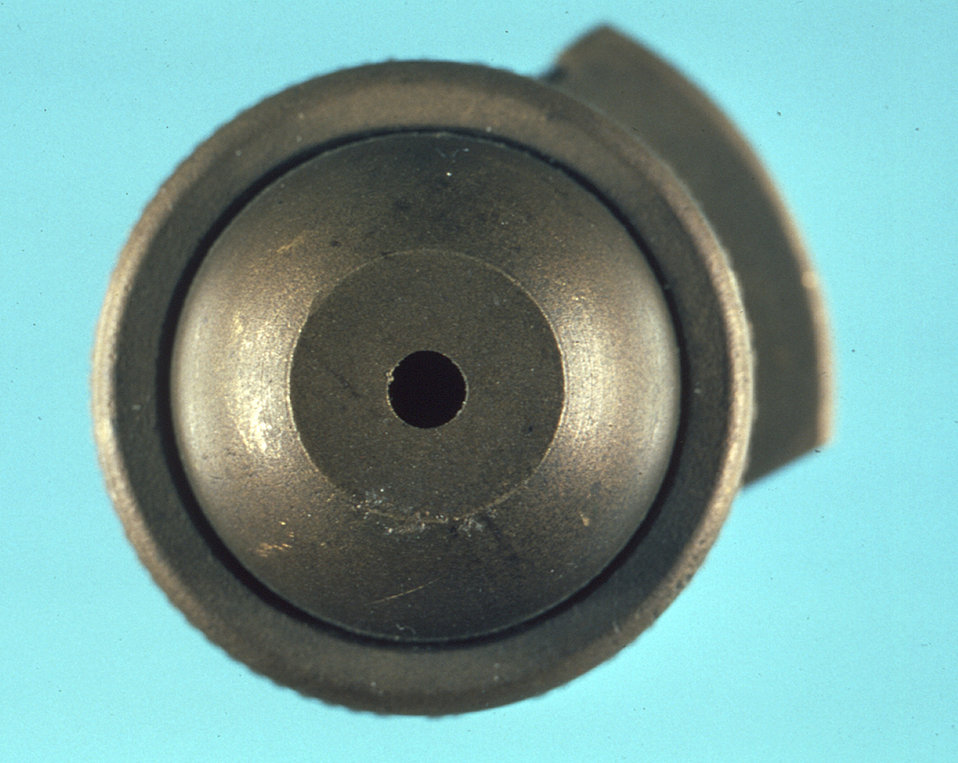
This photograph depicts an enlarged view of the proximal end, i.e., rear port, of a TeeJet SS8003 spray nozzle through which passes an insecticidal spray.